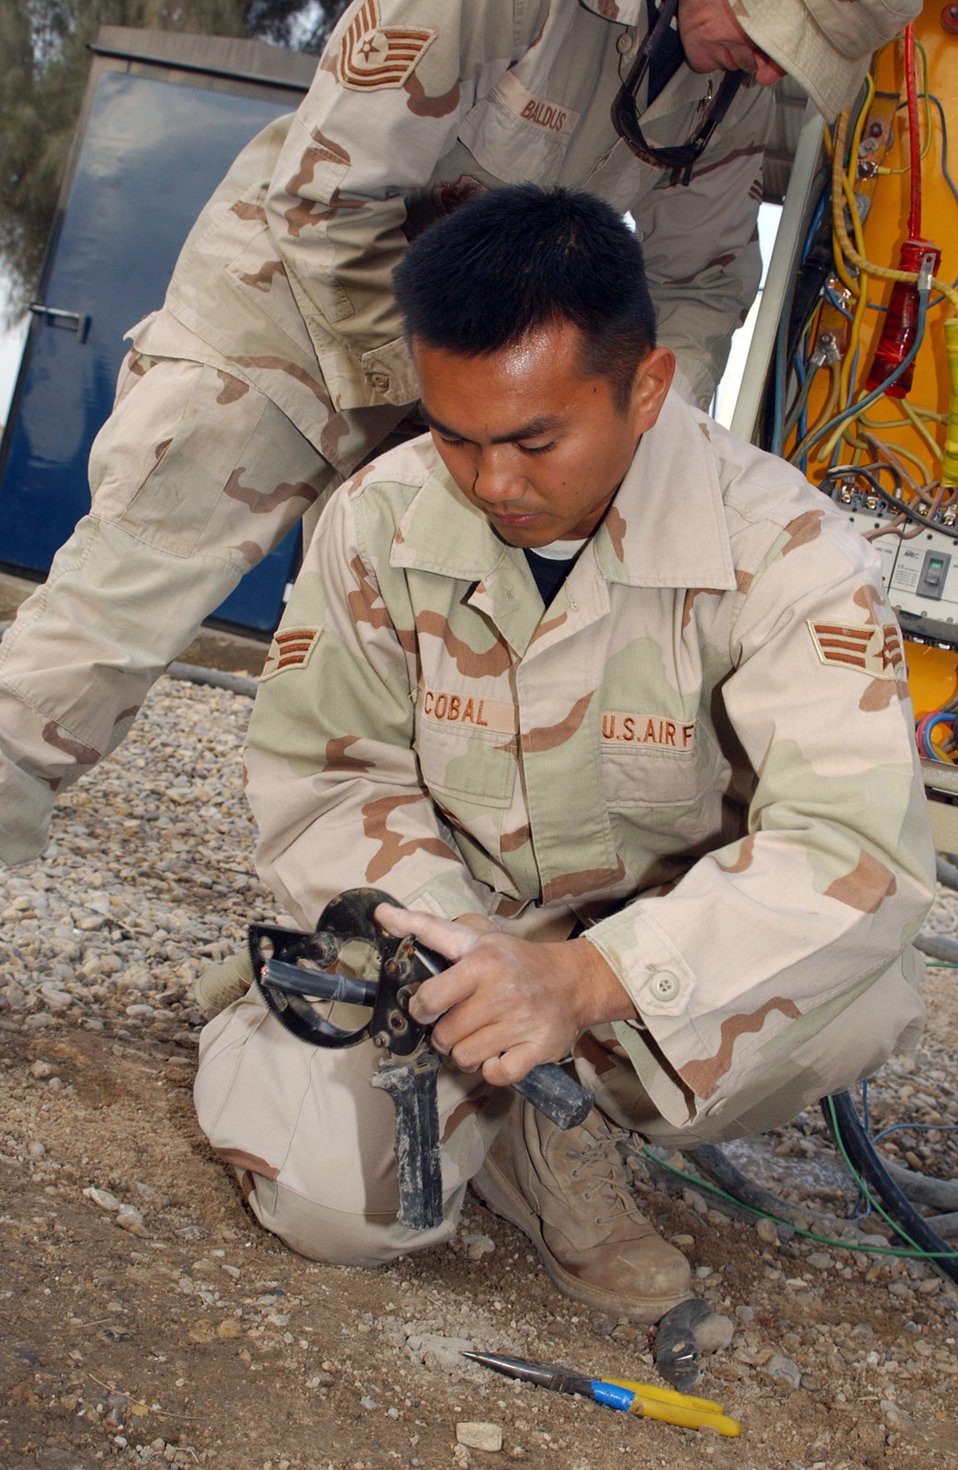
Wire service

ALI BASE, Iraq (AFPN) -- Heavy rains on Christmas Day seeped into and shorted out wiring that served half of the 407th Air Expeditionary Group headquarters building. Airmen from the 407th Expeditionary Civil Engineering Squadron's electric shop dug a 150-foot trench and ran fresh wire. Here, Senior Airman Albert Escobal strips sheathing from the breaker box end of the wire before attaching it to a terminals.